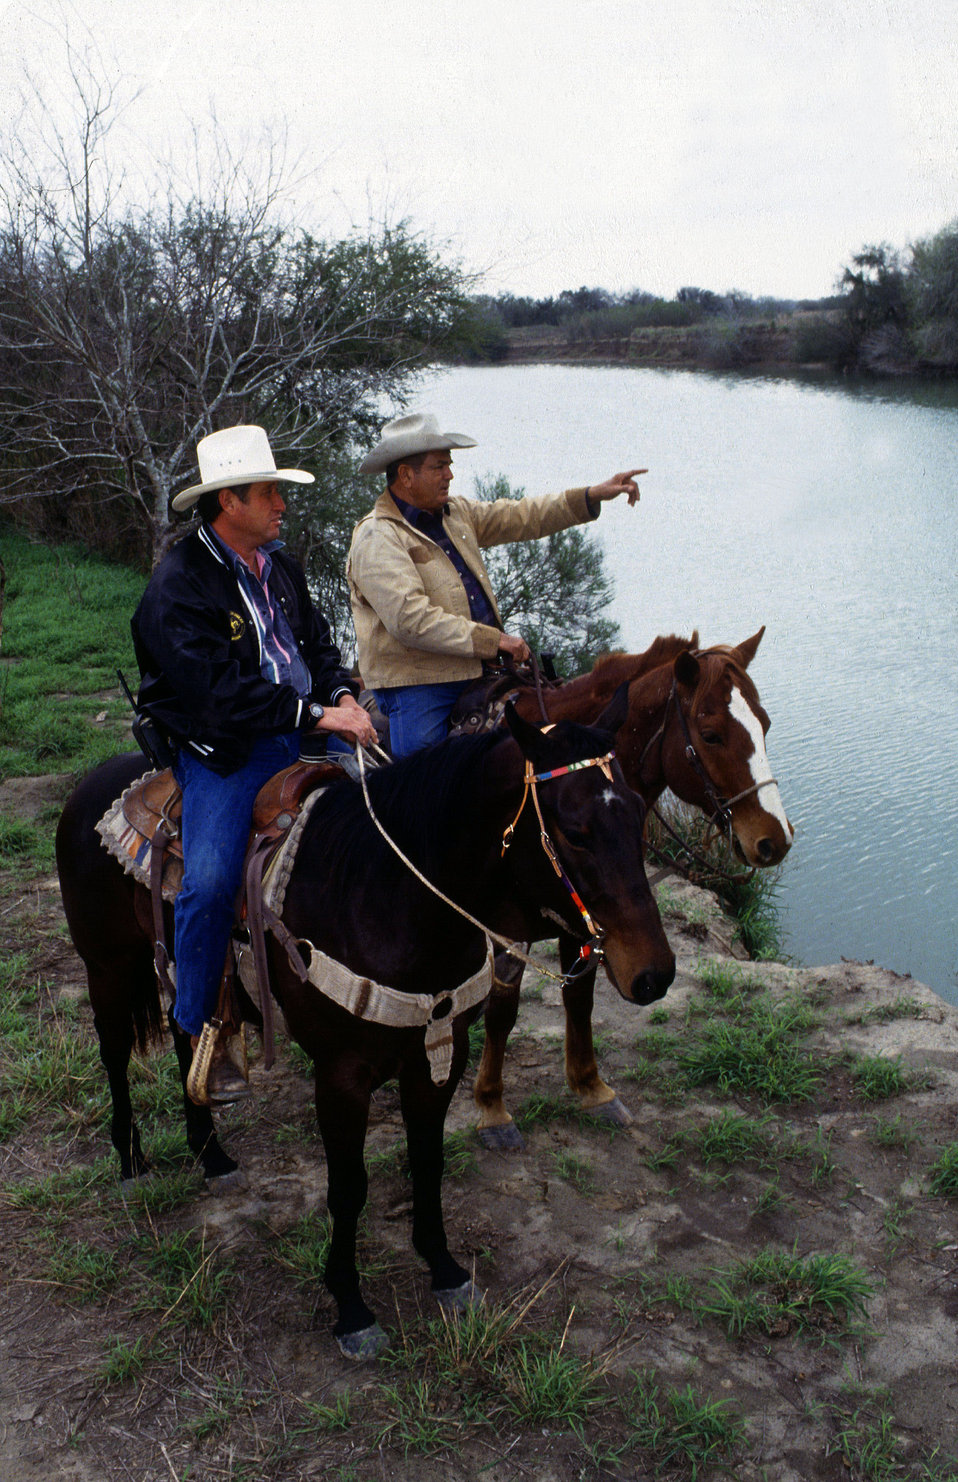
U.S. Department of Agriculture’s (USDA) Animal and Plant Health Inspection Service (APHIS) employees Robert Rodriguez and Horico Garza search along the Rio Grande for livestock that may be carrying ticks. Cattle fever ticks have been eradicated from this country since 1943 except for a narrow strip along the border.